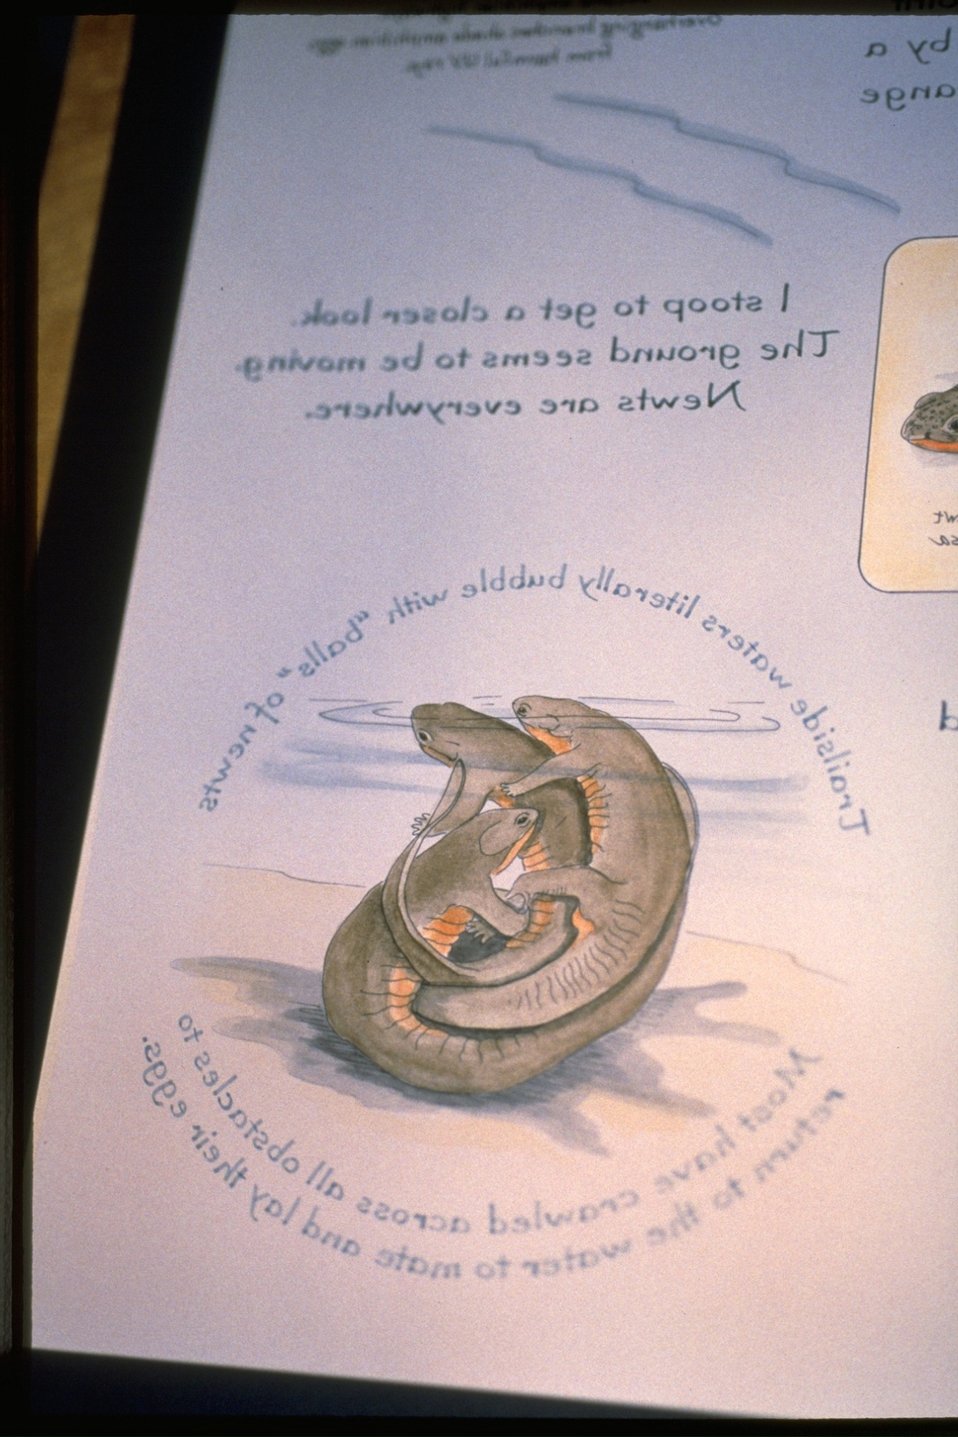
Interpretive Panels: Boardwalk Trail Journals.